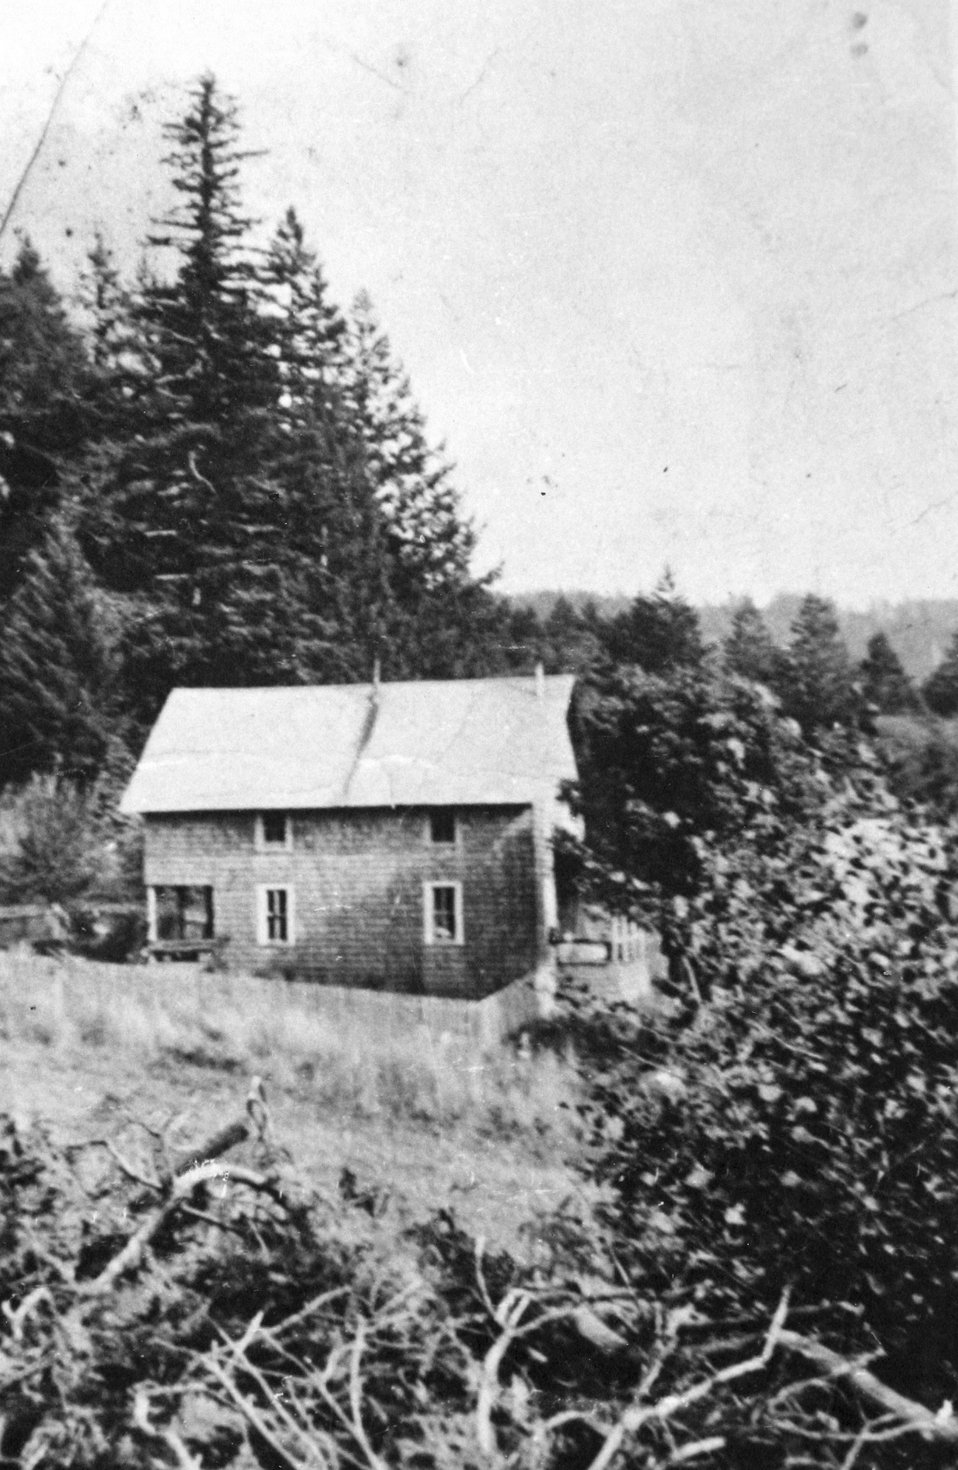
Billing's home at Big Meadow.